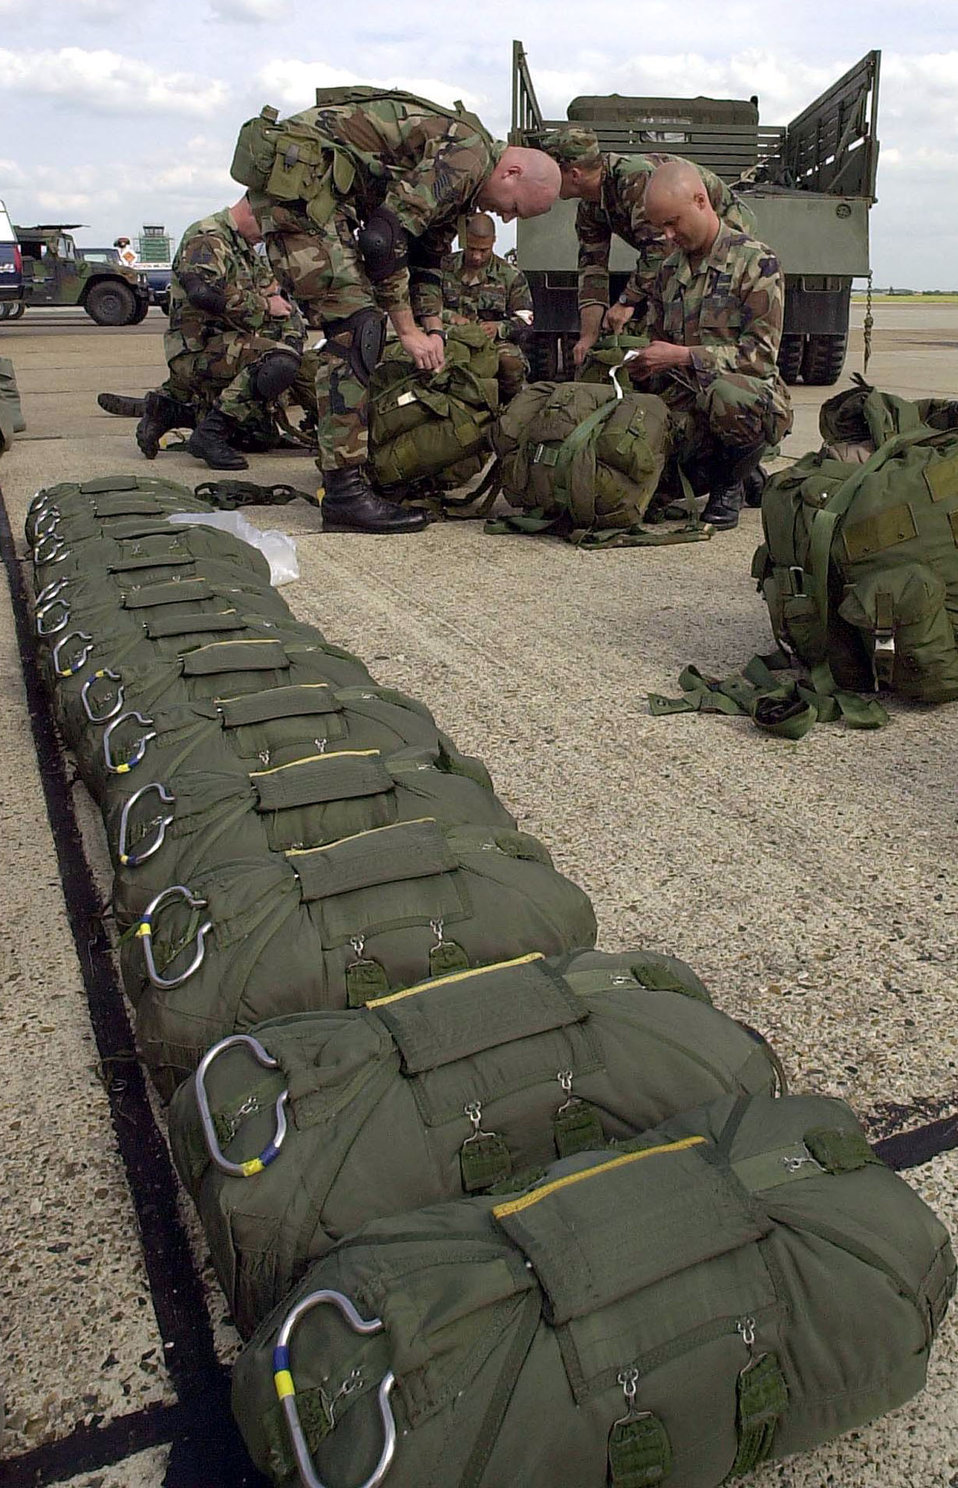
Pre-jump check

ROYAL AIR FORCE MILDENHALL, England -- Members from the 86th Contingency Response Group at Ramstein Air Base, Germany, prepare for a parachute jump. The jump was one part of an aerial demonstration held for visiting U.S. civic, business, and industry leaders on a recent 2003 Joint Civilian Orientation Course.